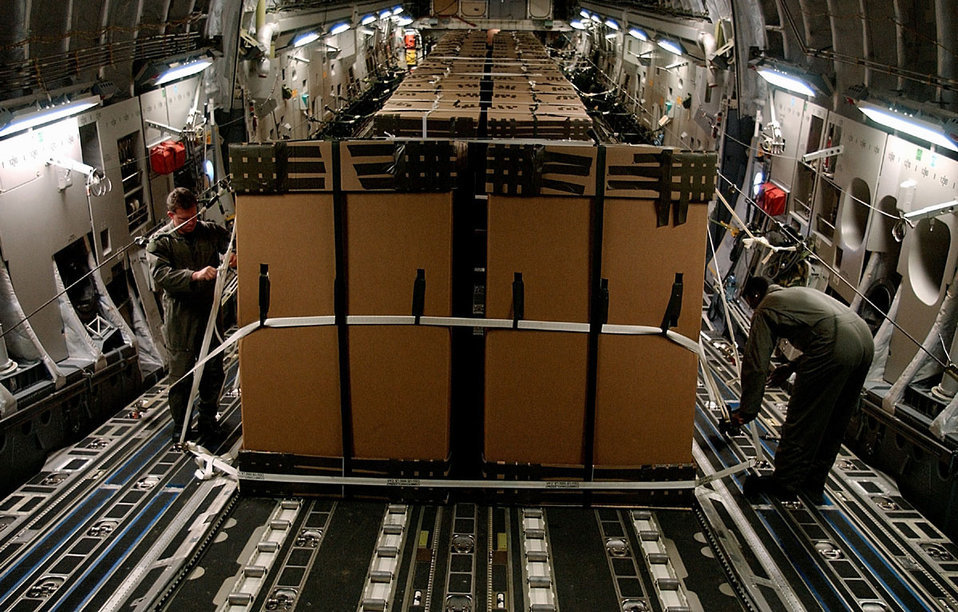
TRIADS drop

RAMSTEIN AIR BASE, Germany -- Loadmasters inspect the Tri-Wall Aerial Delivery System (TRIADS) loaded with Humanitarian Daily Rations enroute to the drop zone. C-17 Globemaster IIIs delivered HDRs to Afghan refugees who have massed inside the borders of Afghanistan. The C-17s carried more 35,000 HDRs packaged in 84 TRIAD boxes, measuring 80 inches tall and 48 by 48 inches square, each filled with 420 HDRs. The HDRs were delivered in a high altitude airdrop. This is the first operational TRIAD delivery from C-17 aircraft and also the first combat airdrop mission performed by a C-17.